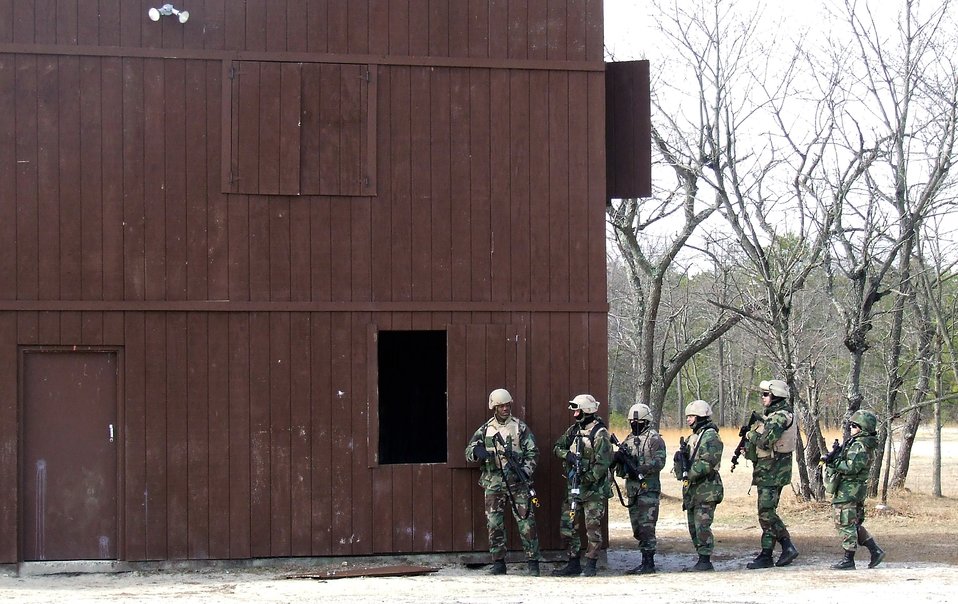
Warrior training

Students in the Air Force Phoenix Warrior Training Course 08-3 practice a military operations in urban terrain scenario scenario during training Feb. 20 on a range at Fort Dix, N.J. The course is taught by members of the Air Force Expeditionary Center's Expeditionary Operations School and 421st Combat Training Squadron and the course prepares security forces Airmen for upcoming deployments.